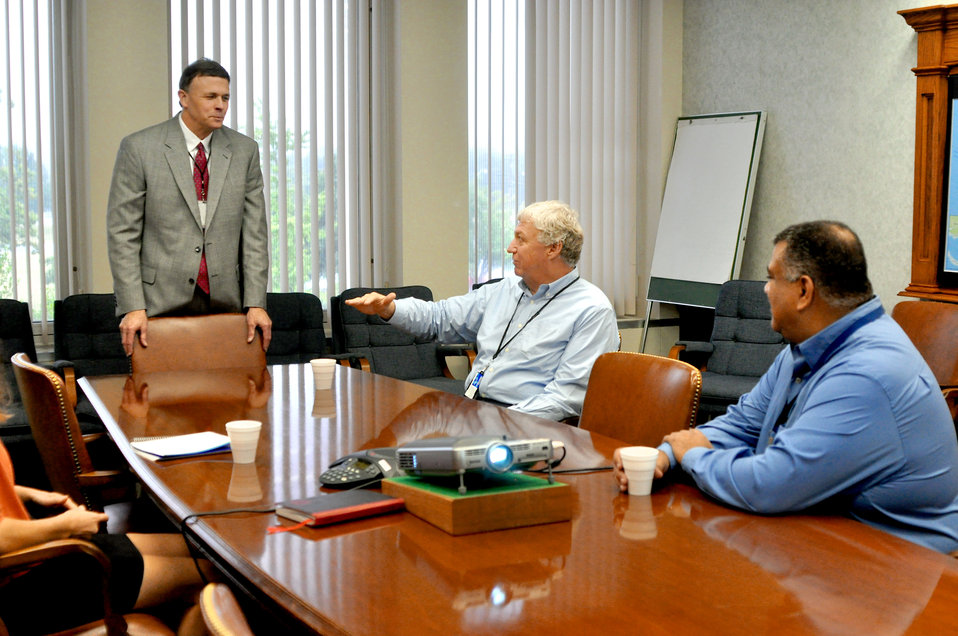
Don Thress Chief Counsel for DOE ORO ,Richard Serino Deputy Administrator, FEMA and Leon Duquella DOE ORO Oak Ridge Emergency Management Forum Chair in Oak Ridge 2013

13-116-11 DOE photo Lynn Freeny 9-26-2013 Oak Ridge Tennessee